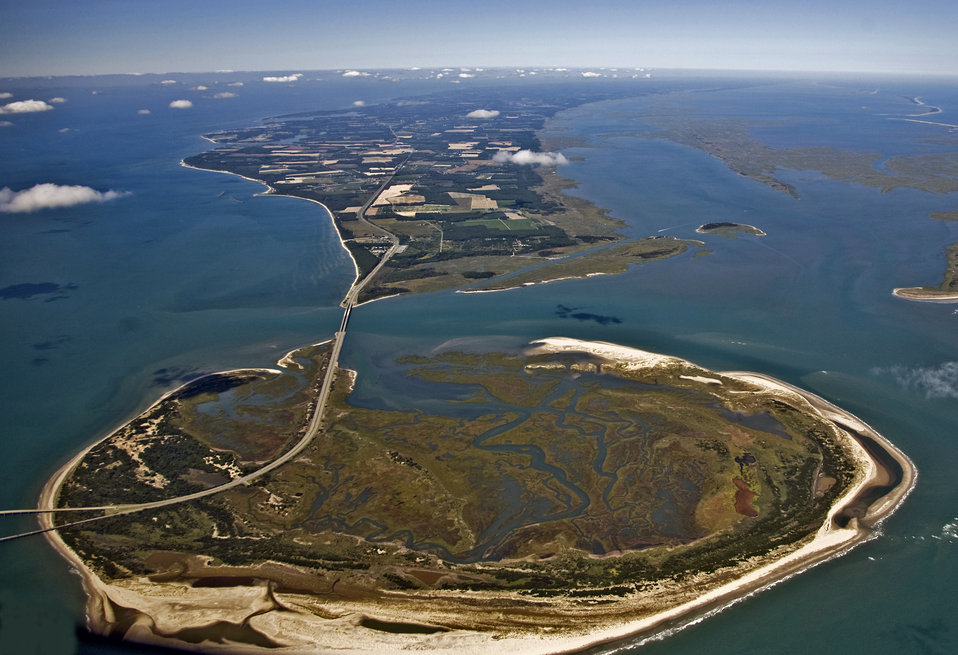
Aerial view

Fisherman Island National Wildlife Refuge, VA.